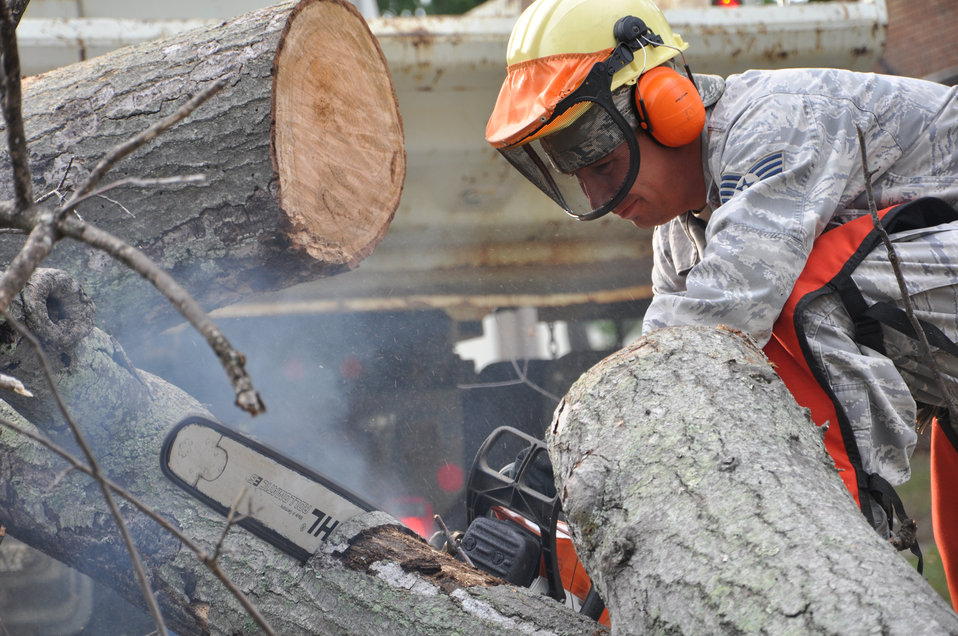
The storm's wake

Staff Sgt. Corey Winchester works to clear a fallen tree May 24, 2011, after a storm at Langley Air Force Base, Va. Sergeant Winchester is a pavements and equipment craftsman assigned to the 633rd Civil Engineer Squadron.